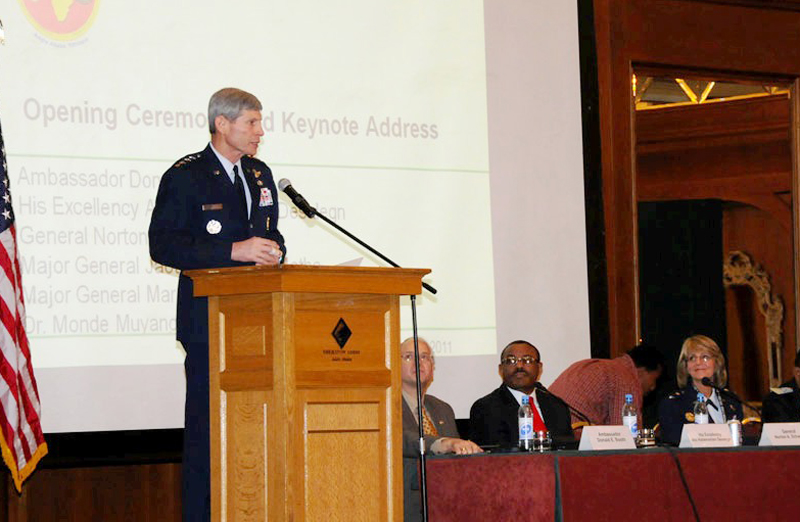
Air force leaders meet

Air Force Chief of Staff Gen. Norton Schwartz addresses attendees of the African Air Chiefs Conference April 26, 2011, in Addis Ababa, Ethiopia. Senior leaders from 24 African air forces, U.S. Africa Command, and civilian aviation agencies attended the three-day conference to discuss common aviation issues and focus on the shared goals and challenges of building air partnerships across Africa.